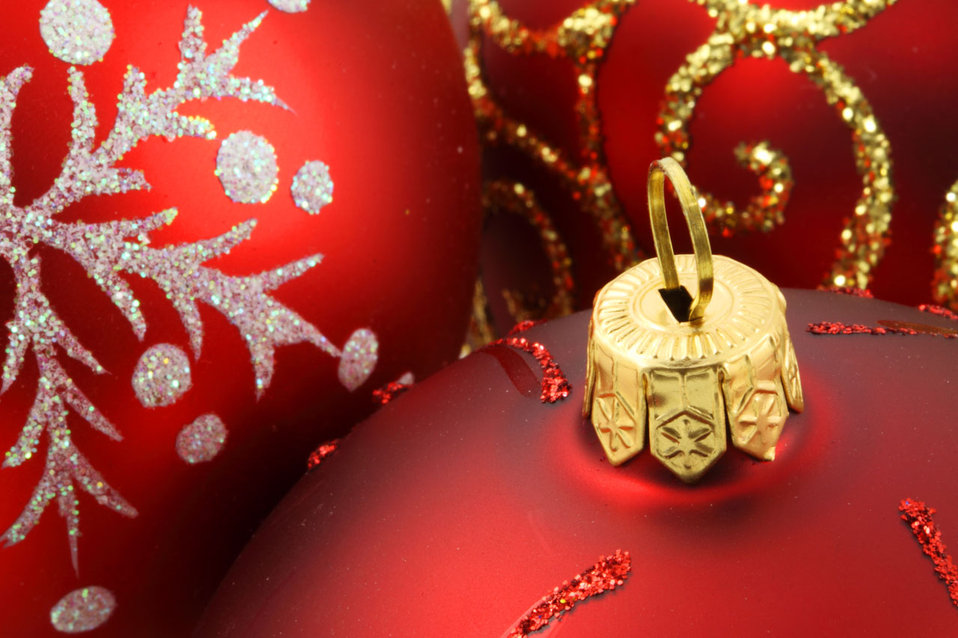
Christmas baubles

Three red christmas baubles.